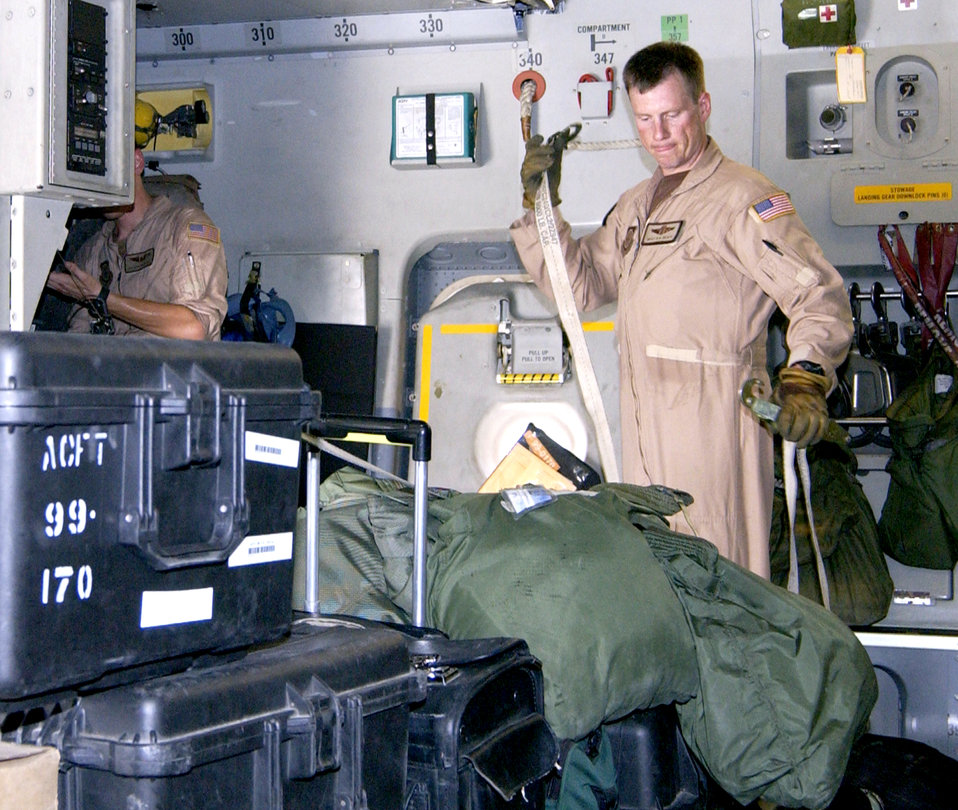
C-17 Globemaster III crew doing its part

Master Sgt. Bryan Beaty prepares cargo before takeoff at a forward operating base in Southwest Asia on Aug. 5. Sergeant Beaty is a C-17 Globemaster III loadmaster with the 816th Expeditionary Airlift Squadron.